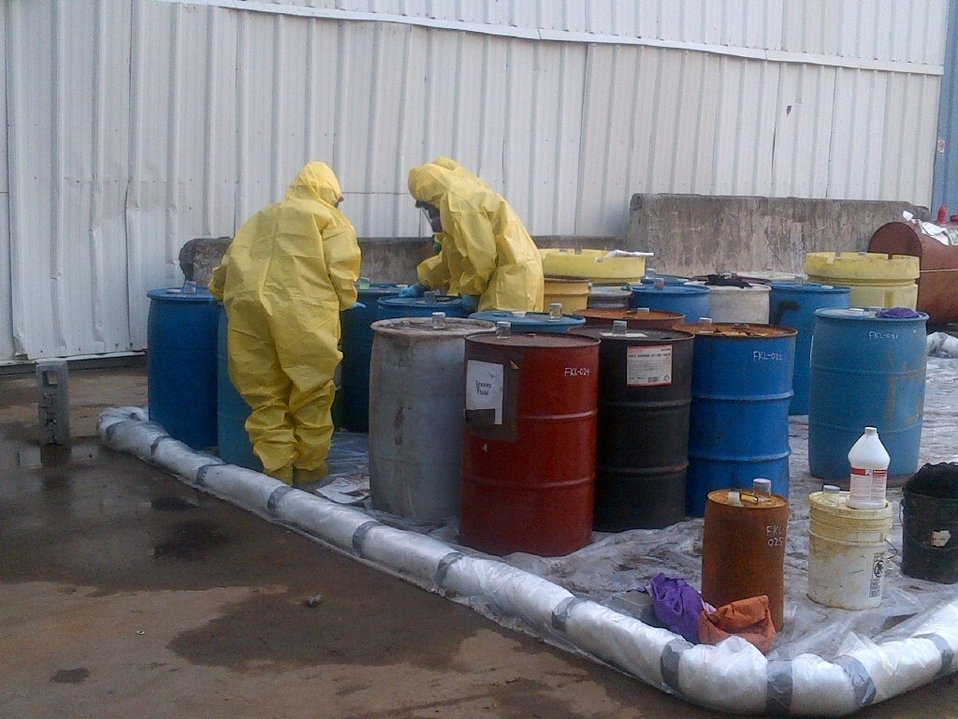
November 13, 2012 EPA Contractors at Fresh Kills Landfill, Staten Island

EPA Contractors sampling the contents of orphaned containers for proper disposal at the staging area at Fresh Kills Landfill, Staten Island.